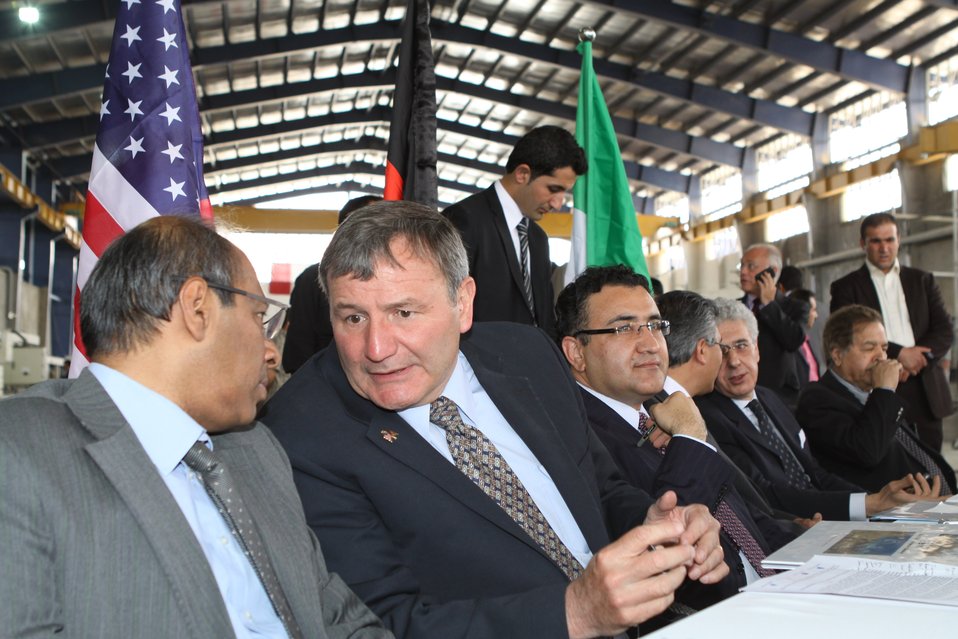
100525 Hirat Marble Conference 307